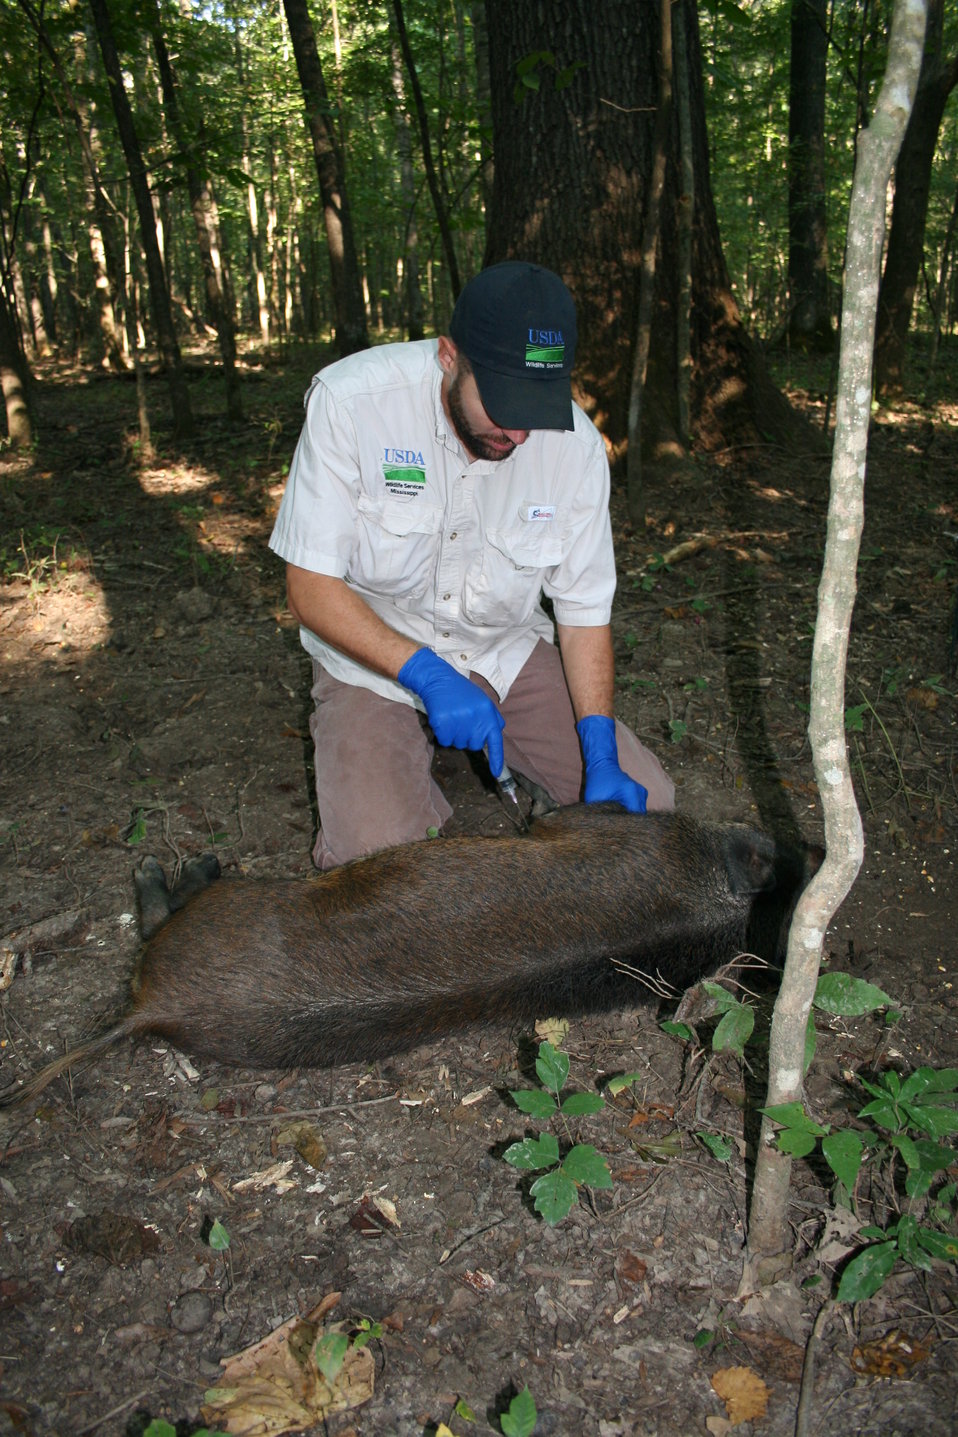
The U.S. Department of Agriculture's (USDA) Animal Plant Health and Inspection Service (APHIS) Wildlife Services (WS) disease biologists monitor feral swine for the presence of more than 10 diseases that can affect livestock, people, and pets. Since 2008, WS has sampled over 7,000 feral swine in 35 states for foreign and endemic animal diseases.